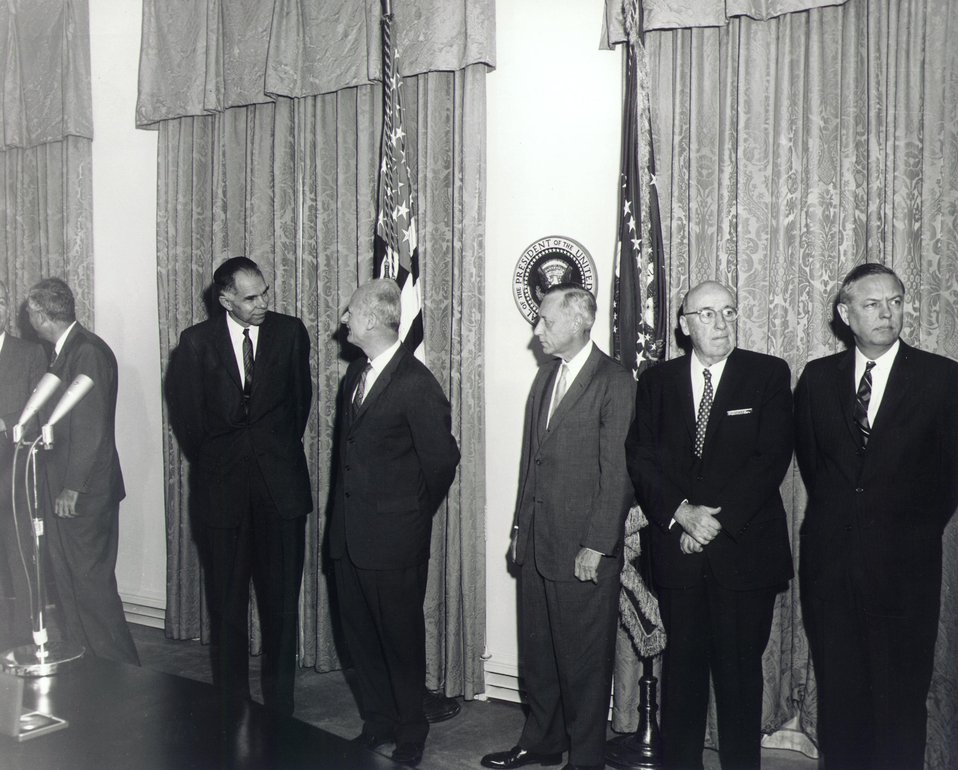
Fermi Award Ceremony for Dr. Bethe in Washington on Dec. 1, 1961.